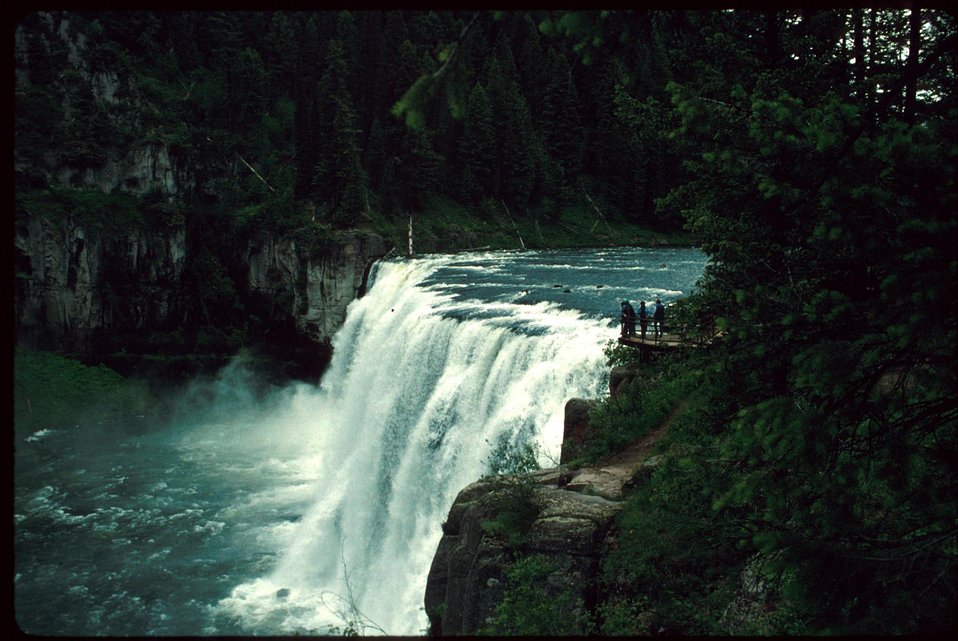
Upper Mesa Falls Island Park Upper Snake River District